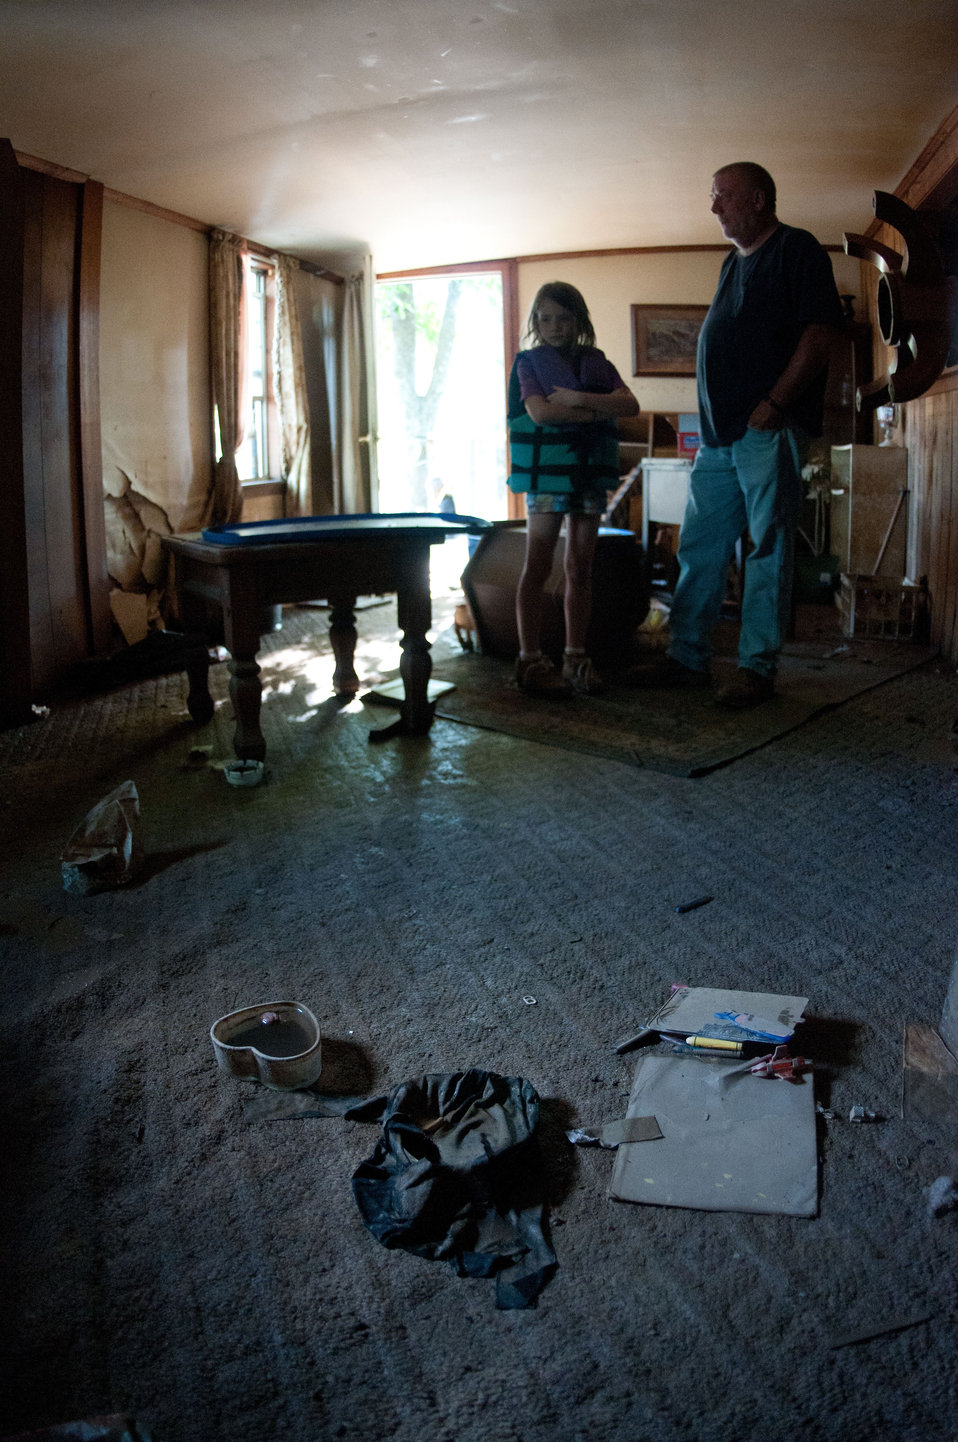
Lauderdale County, TN resident Robert Moffatt and his grand daughter Katlyn Moffatt are in his home, near Open Lake on Saturday, May 21, 2011. They are standing on soggy carpet, in the living room looking over the destruction that occurred when flowing water repositioned every piece of furniture and his possessions. The floor they stand on is almost 10 feet above the ground.